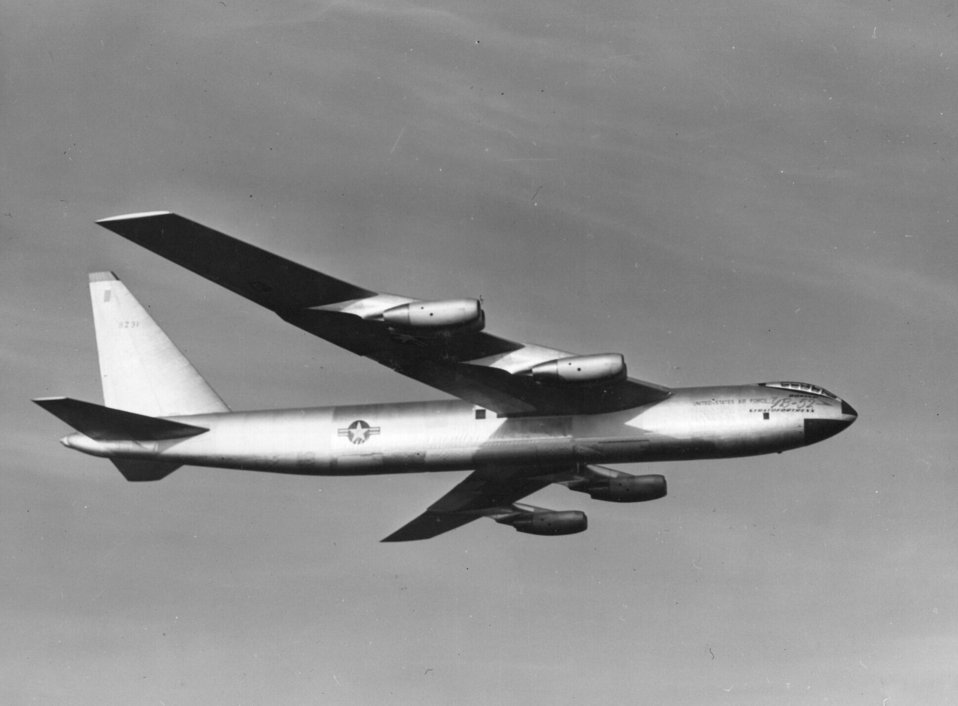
B-52

1950's -- B-52